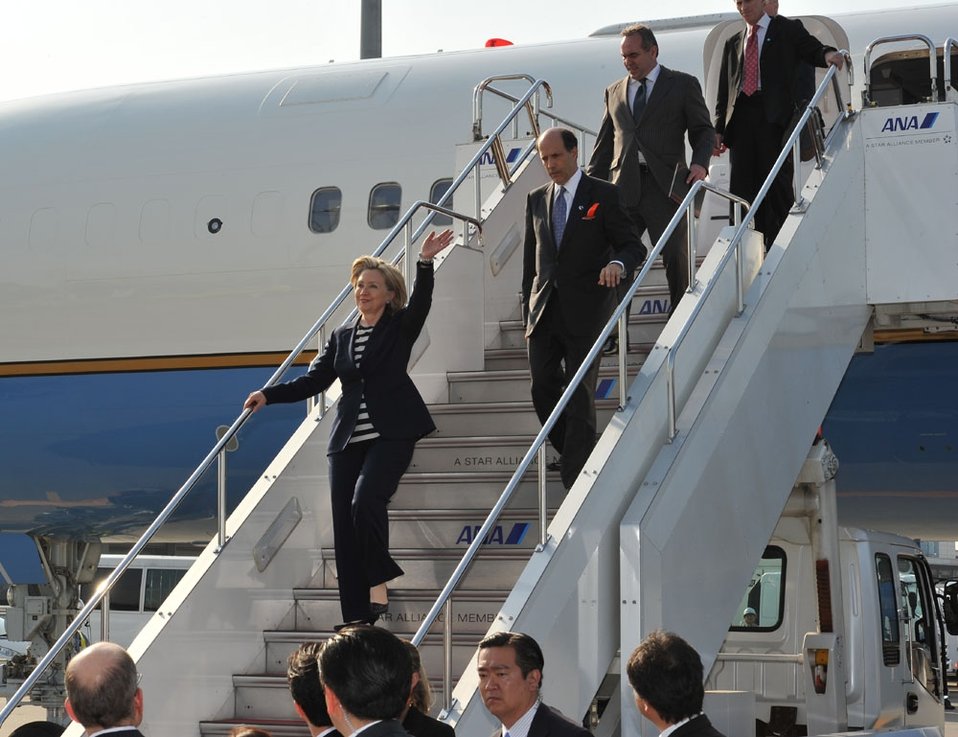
Secretary Clinton Arrives at Tokyo’s Haneda Airport

U.S. Secretary of State Hillary Rodham Clinton arrives at Tokyo's Haneda Airport. Behind her are U.S. Ambassador to Japan John V. Roos and U.S. Assistant Secretary of State for East Asian and Pacific Affairs Kurt Campbell, Tokyo, Japan, May 21, 2010.